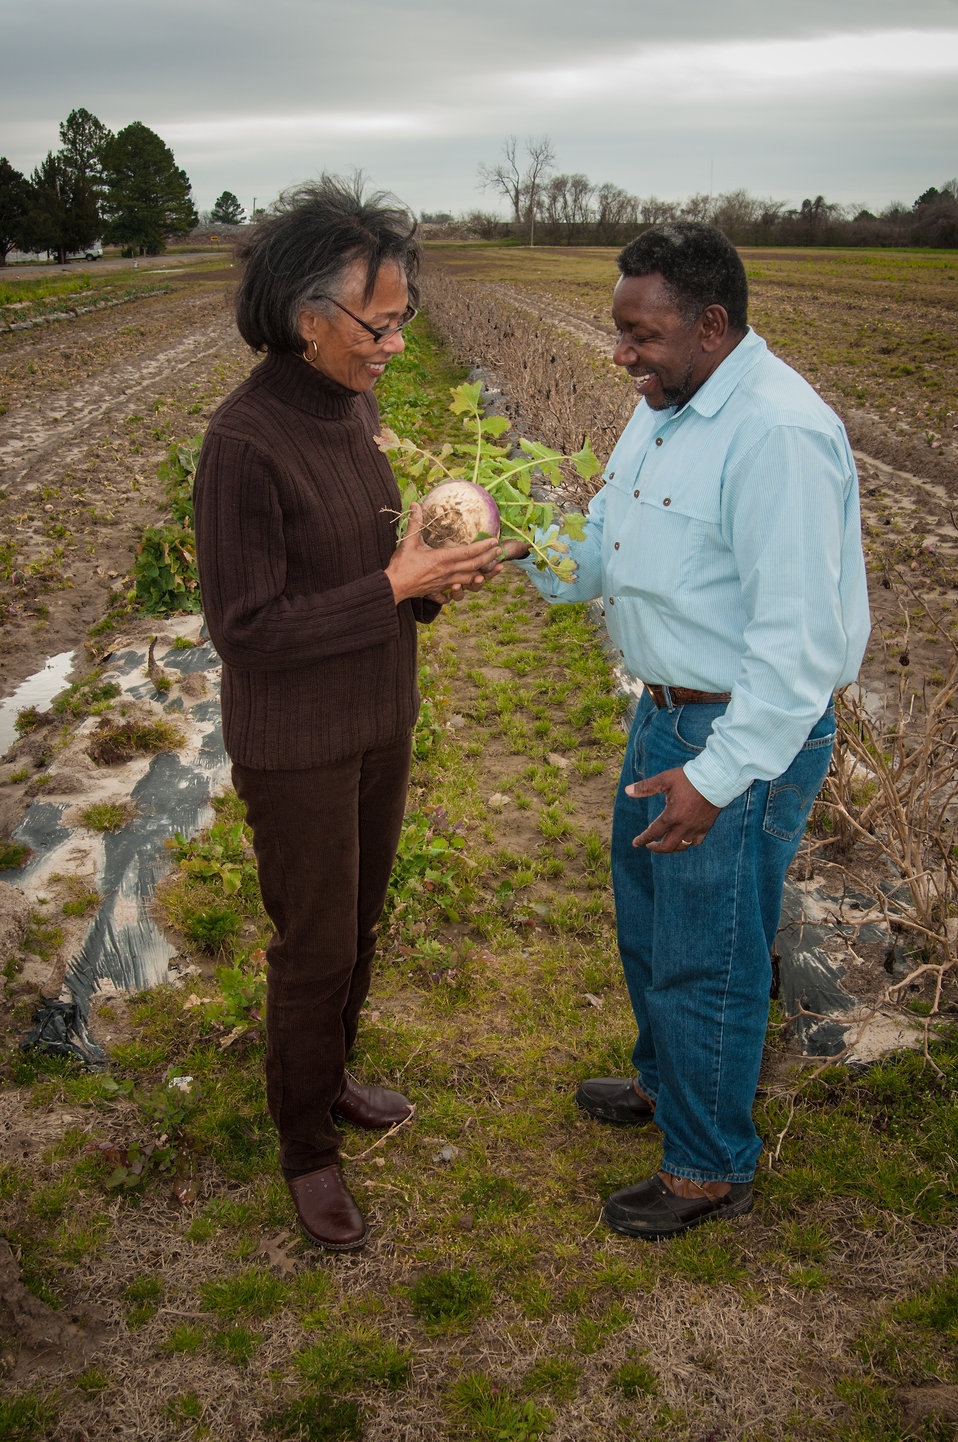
East Arkansas Enterprise Community, (EAEC) Inc. consultant Mildred Barnes-Griggs and U.S. Department of Agriculture (USDA) Arkansas Strike Team Leader Charlie Williams discuss the technical assistance available for crop production, management, harvesting, food security, value added products and marketing options for the EAEC in Forrest City, AR on Mar. 4, 2013. USDA in partnership with Heifer International (an International organization whose mission is to work with communities to end hunger and poverty and care for the Earth) and various for-profit and non-profit organizations have organized the Seeds of Change Implementation Plan to use sustainable agriculture to build food systems in the Arkansas Delta. The program has evolved into the Arkansas Delta Seeds of Change Initiative.